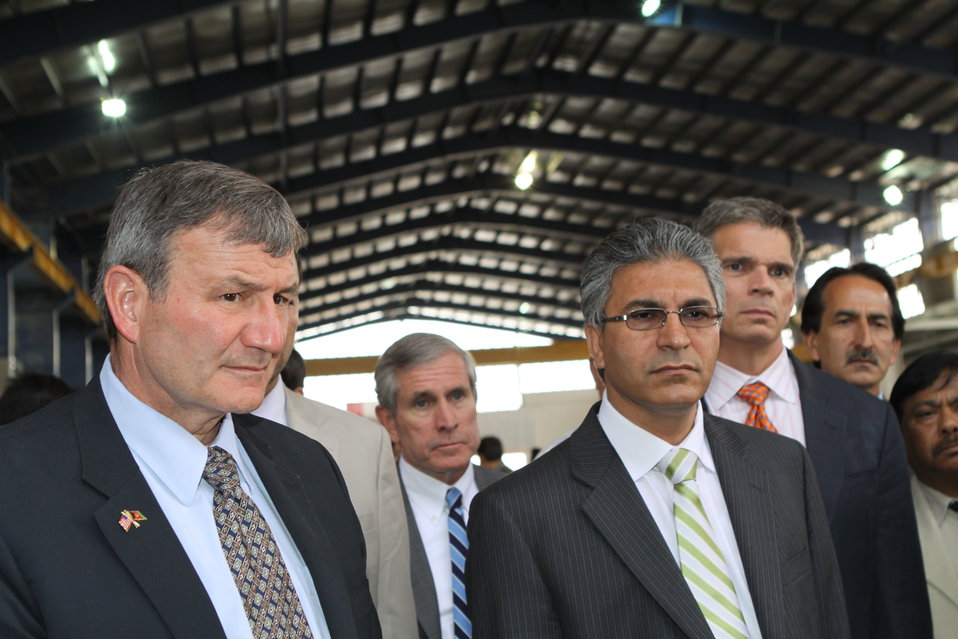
100525 Hirat Marble Conference 447